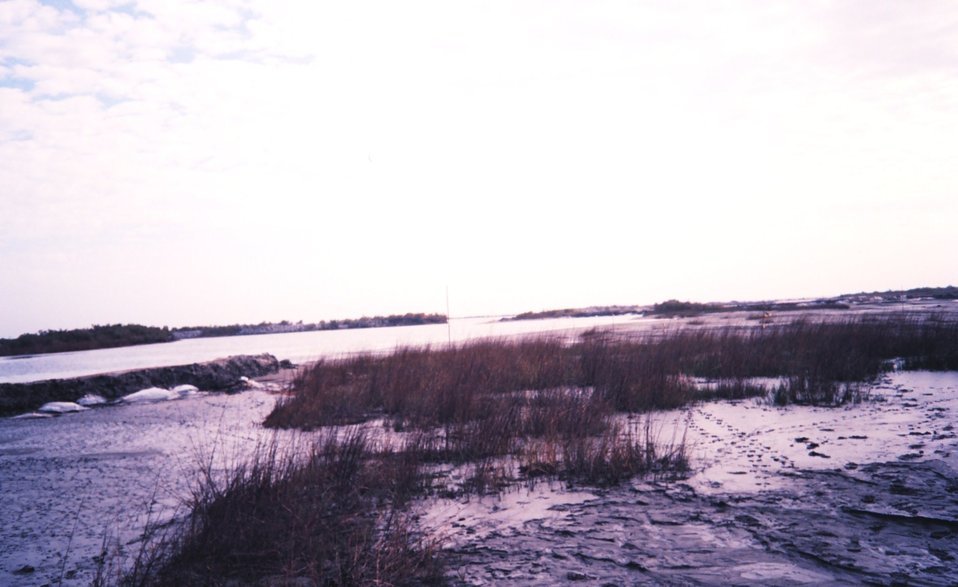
The Greenhill/East Timbalier dredge flow into natural marsh. Existing marsh will recover if not buried too deeply.